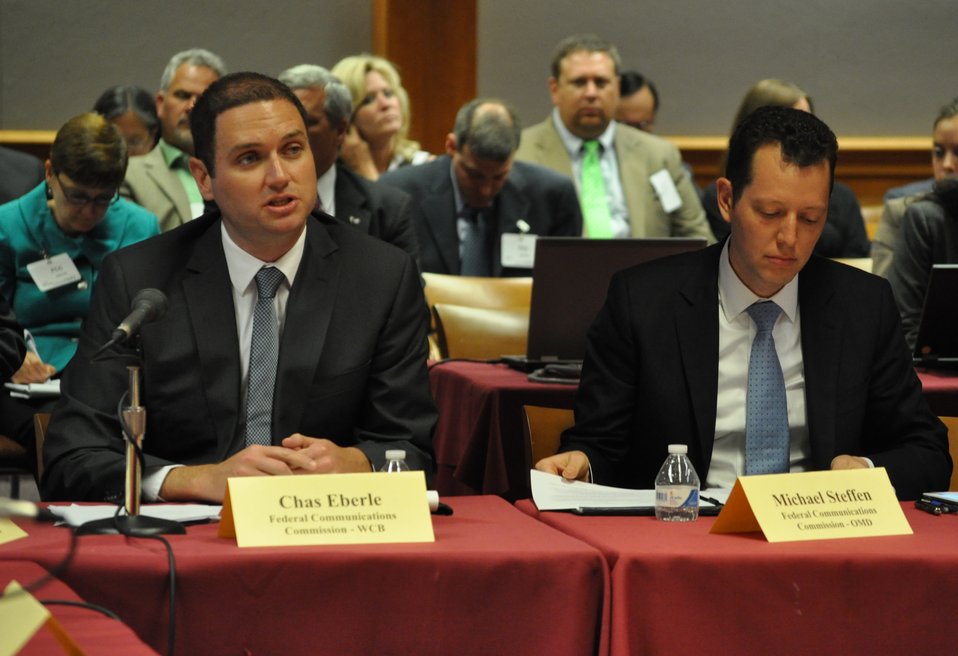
5.6.2014 E-Rate Modernization Workshop

Education and Library Technology Experts Roundtable: Enabling the Lowest “E-rate” for Schools and Libraries